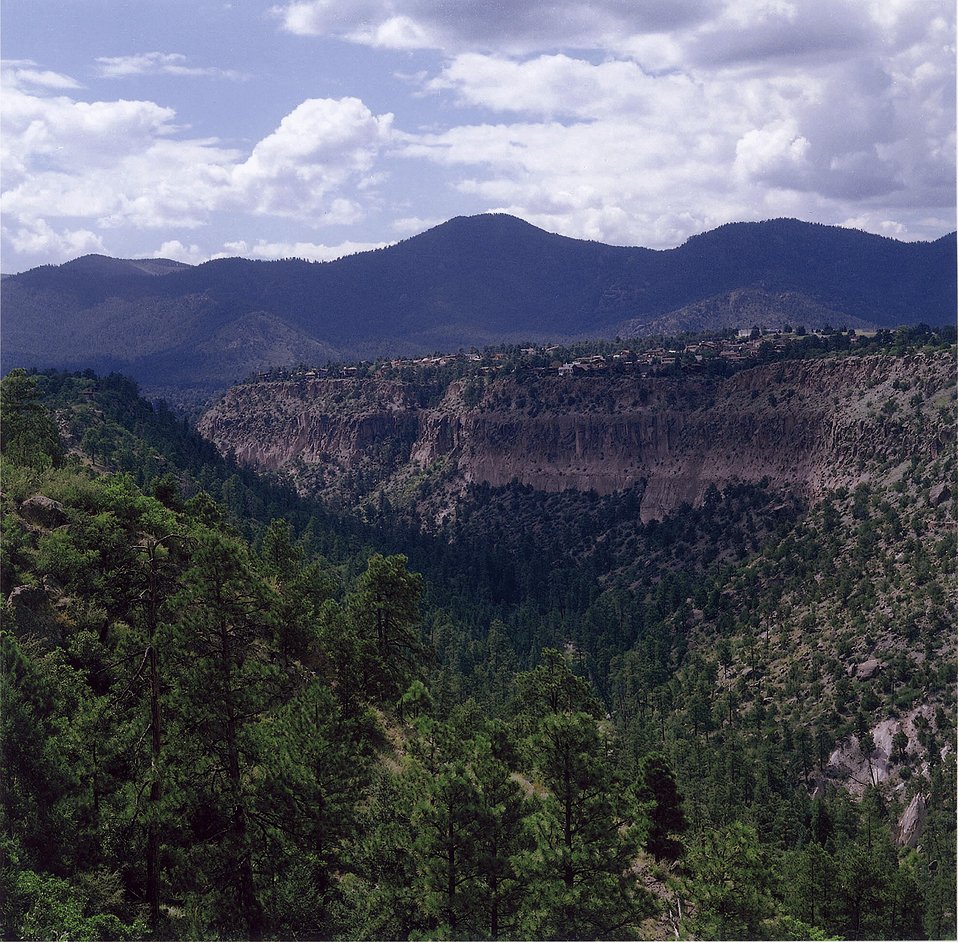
MOUNTAINS IN THE AREA OF LOS ALAMOS NATIONAL LABORATORY.